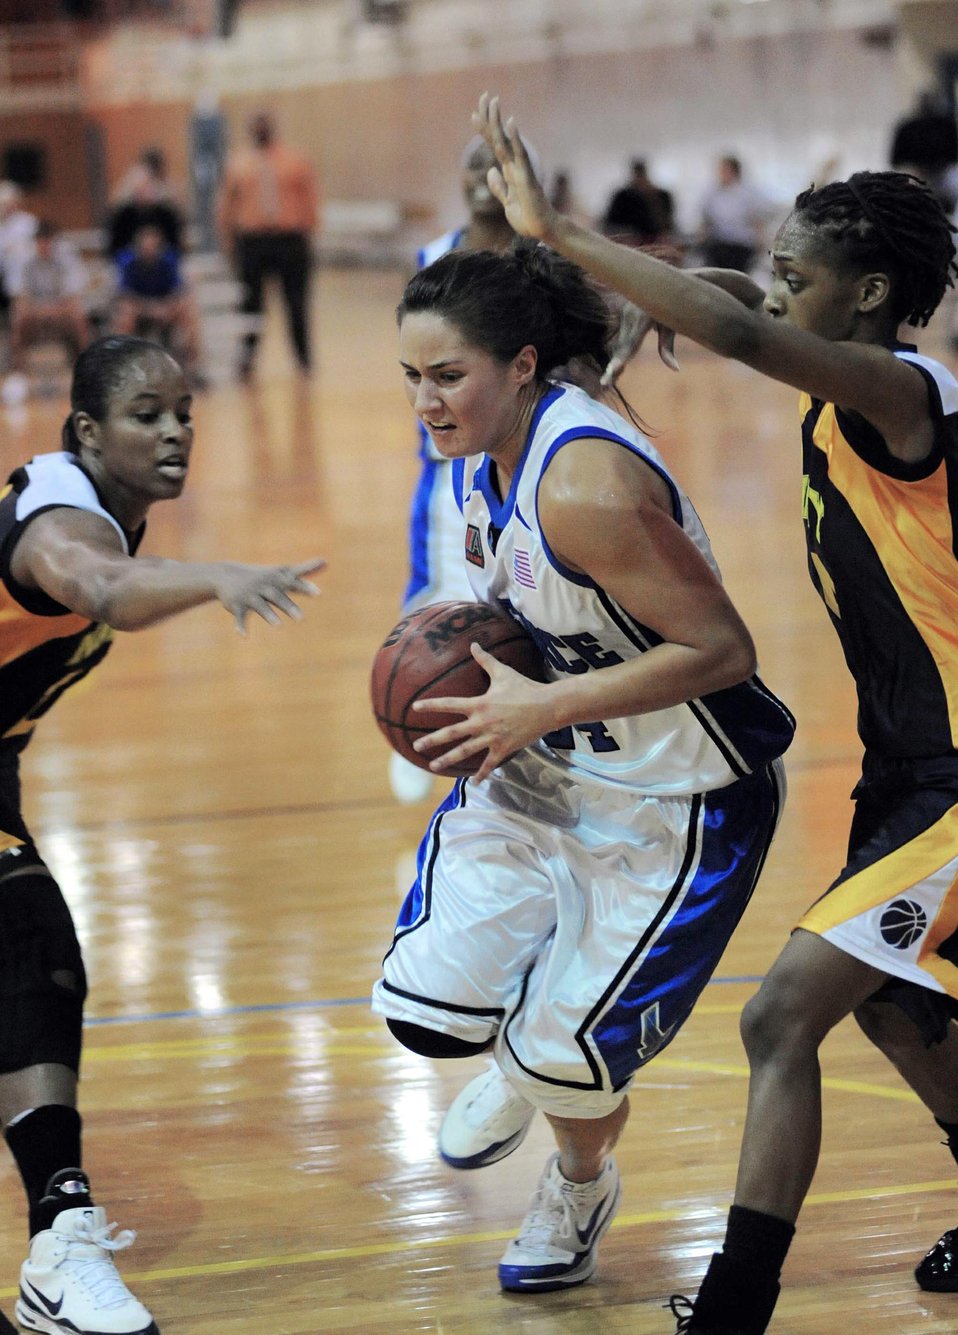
Armed Forces Basketball Championship

Second Lt. Andrea Taylor, from Vandenberg Air Force Base, Calif., drives to the basket for two during a basketball game against the Navy. The Air Force women lost to the Navy 81-69 during the third day of games for the Armed Forces Basketball Championship. The tournament ran from May 12 to 17 at the Naval Support Activity Mid-South in Millington, Tenn.